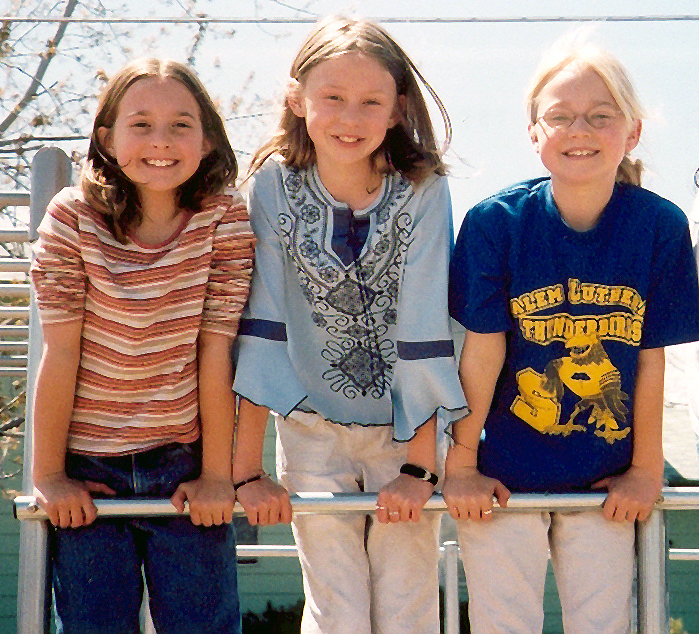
Supporting the troops

PETERSON AIR FORCE BASE, Colo. -- (Left to right) Alicia Drum, Janae Kirschke and Marissa Uhlhorn wrote a letter supporting American airmen. Attached to the letter was $10.25 to show they were